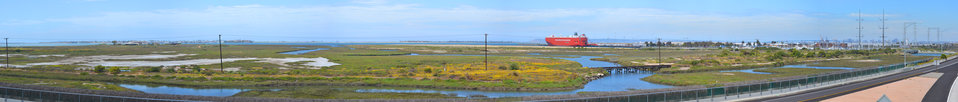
Panoramic of the Sweetwater Marsh Unit of the San Diego Bay NWR

The Sweetwater Marsh Unit spans the South Bay edge along the cities of National City and Chula Vista, CA